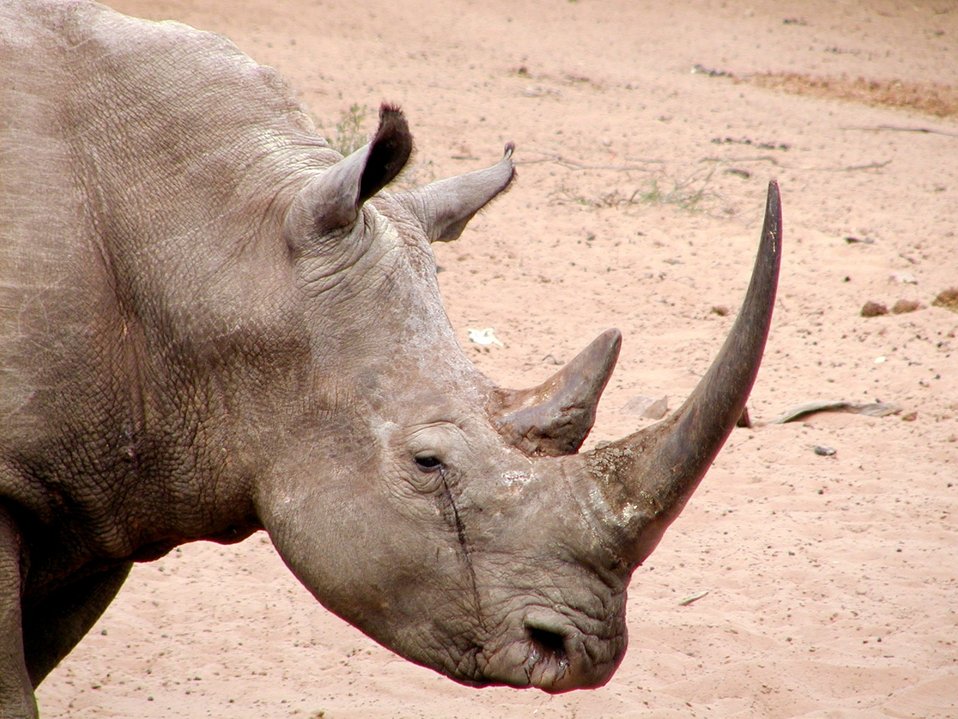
White rhino

Mkhuze, South Africa